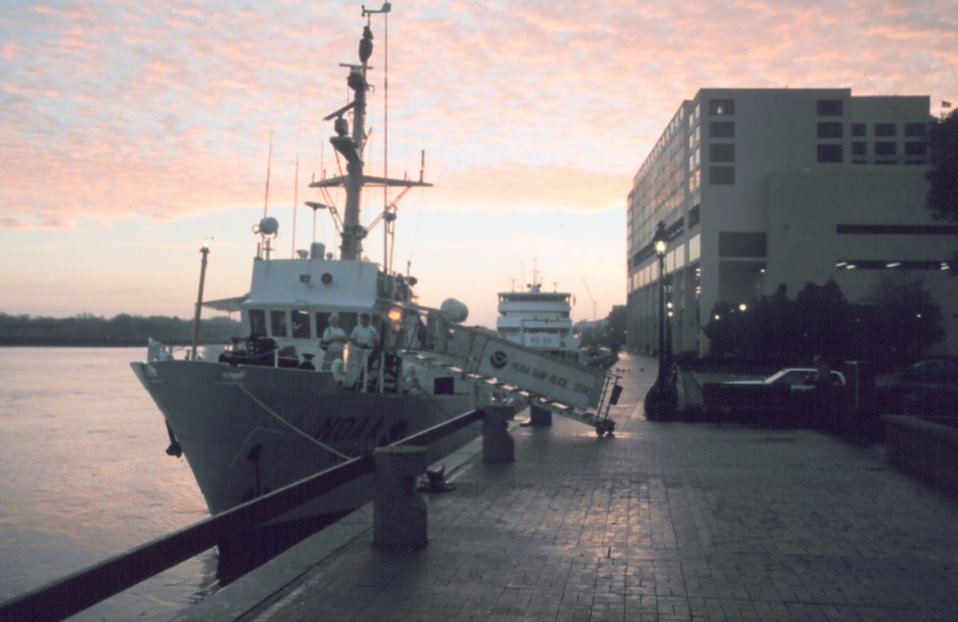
NOAA Ship RUDE tied up at sunset at NOAA's Atlantic Marine Center in Norfolk.